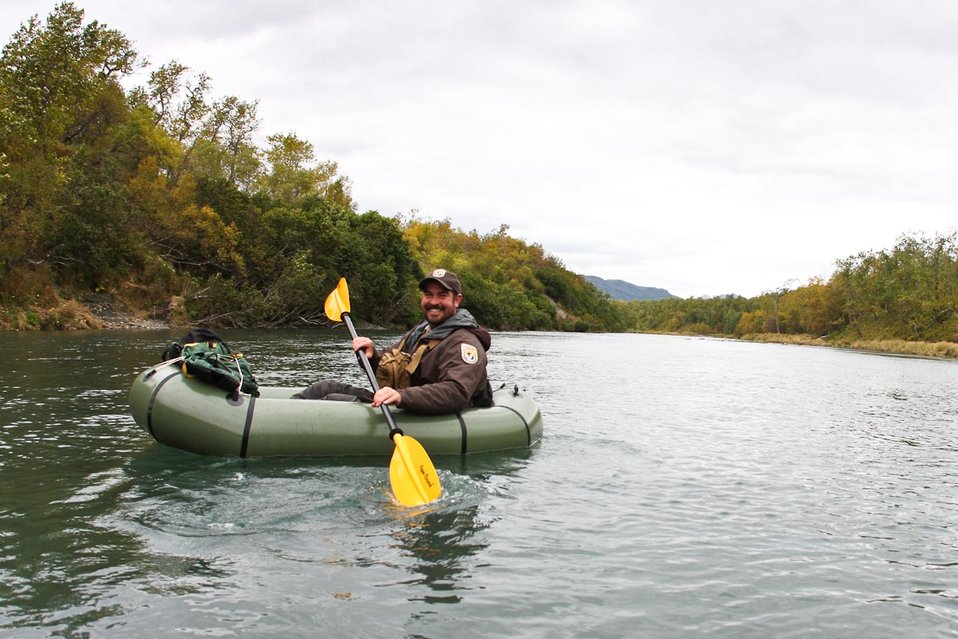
Park Ranger on Uganik River

Lisa Hupp/USFWS
Source: Kodiak NWR
As part of the Uganik Public Use Survey, park rangers regularly patrol the lower Uganik River utilizing small, packable rafts.